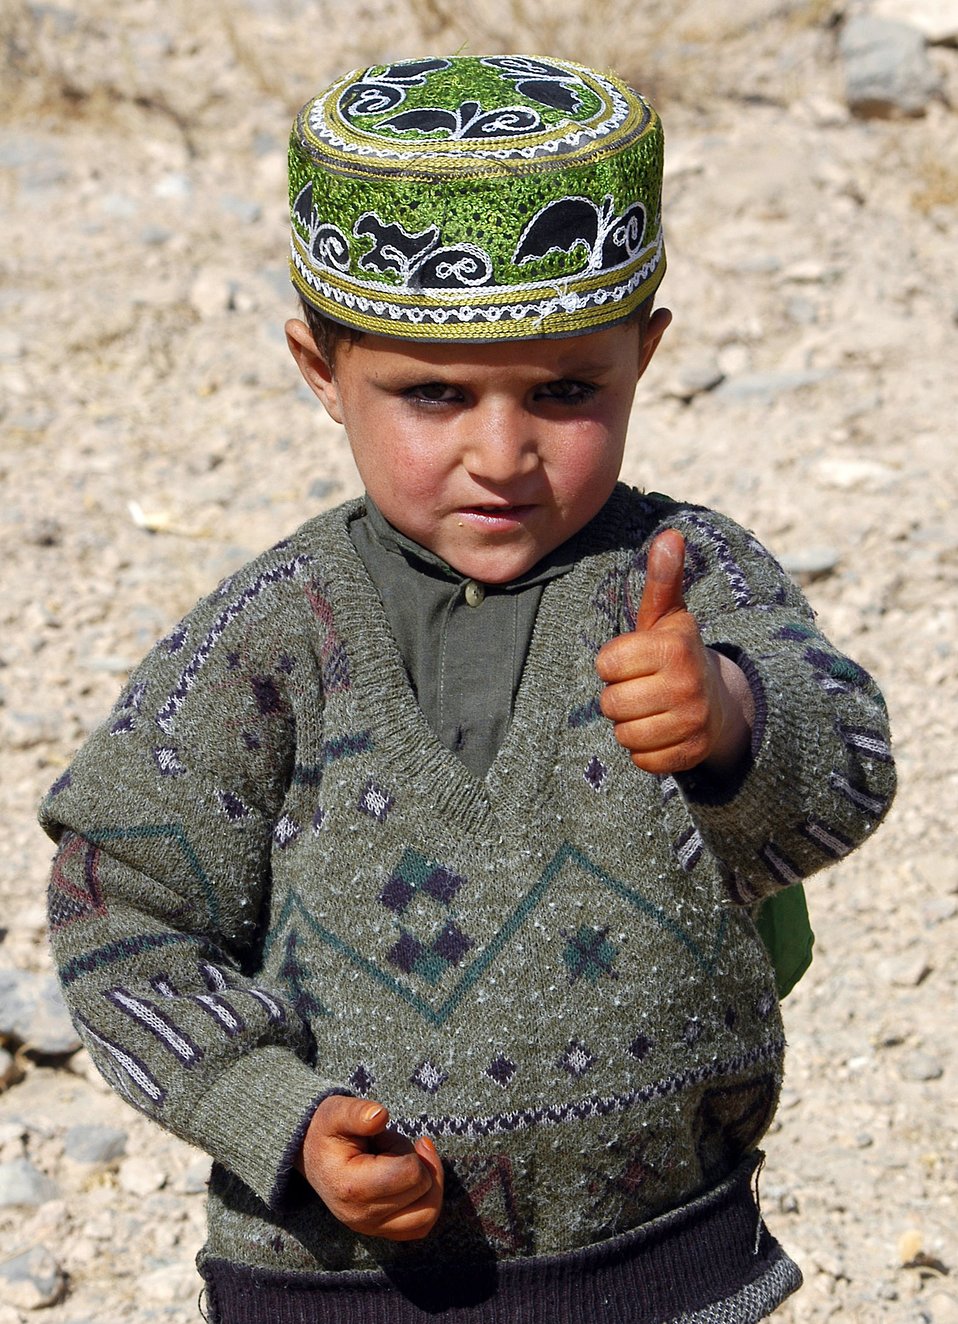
Spreading cheer

PARWAN PROVINCE, Afghanistan (AFPN) -- An Afghan boy gives a